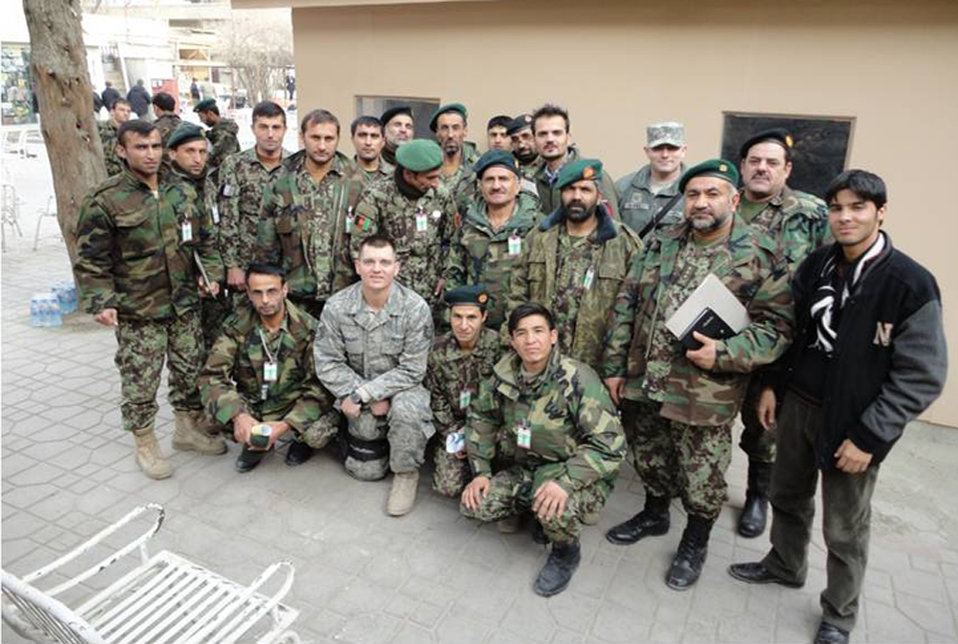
Fingerprint training

Members of the Afghan National Army Criminal Investigation Command pose for a photo with their mentors after a successful crime-scene processing, securing and fingerprint analysis Jan. 3, 2011, at Camp Eggers, Afghanistan.